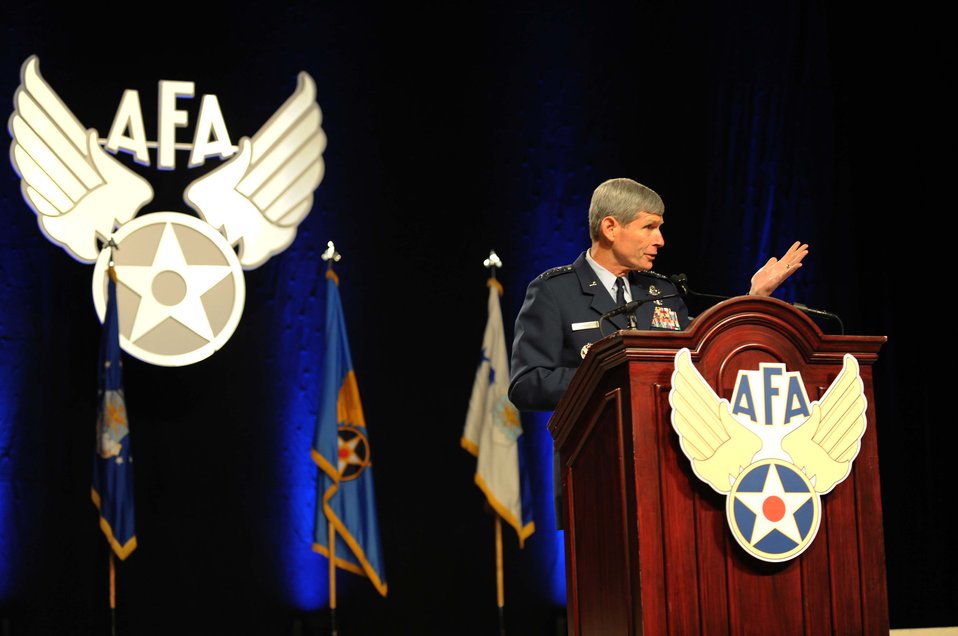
Air Force will preserve ‘core contributions’ despite pressures, CSAF says

Air Force Chief of Staff Gen. Norton Schwartz speaks to attendees Sept. 20, 2011, at the Air Force Association's 2011 Air & Space Conference and Technology Exposition at National Harbor, Md. Schwartz said Air Force leaders are focused on managing potential budget constraints so the service can continue to provide its unique contributions to national security.